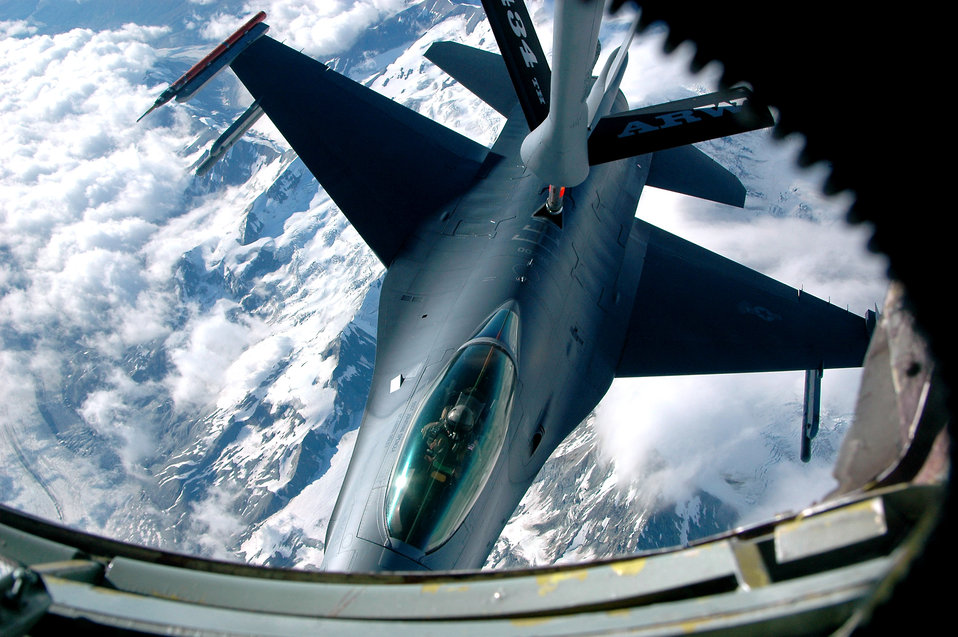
Tankers keep aircraft in the fight at Red Flag-Alaska

A KC-135 Stratotanker from Grissom Air Reserve Base, Ind., provides in-flight refueling to an F-16 Fighting Falcon from Eielson Air Force Base, Alaska, over the Pacific Alaska Range Complex during Red Flag-Alaska July 16. Red Flag-Alaska is a multinational air combat training exercise that began July 12 and will conclude July 28.